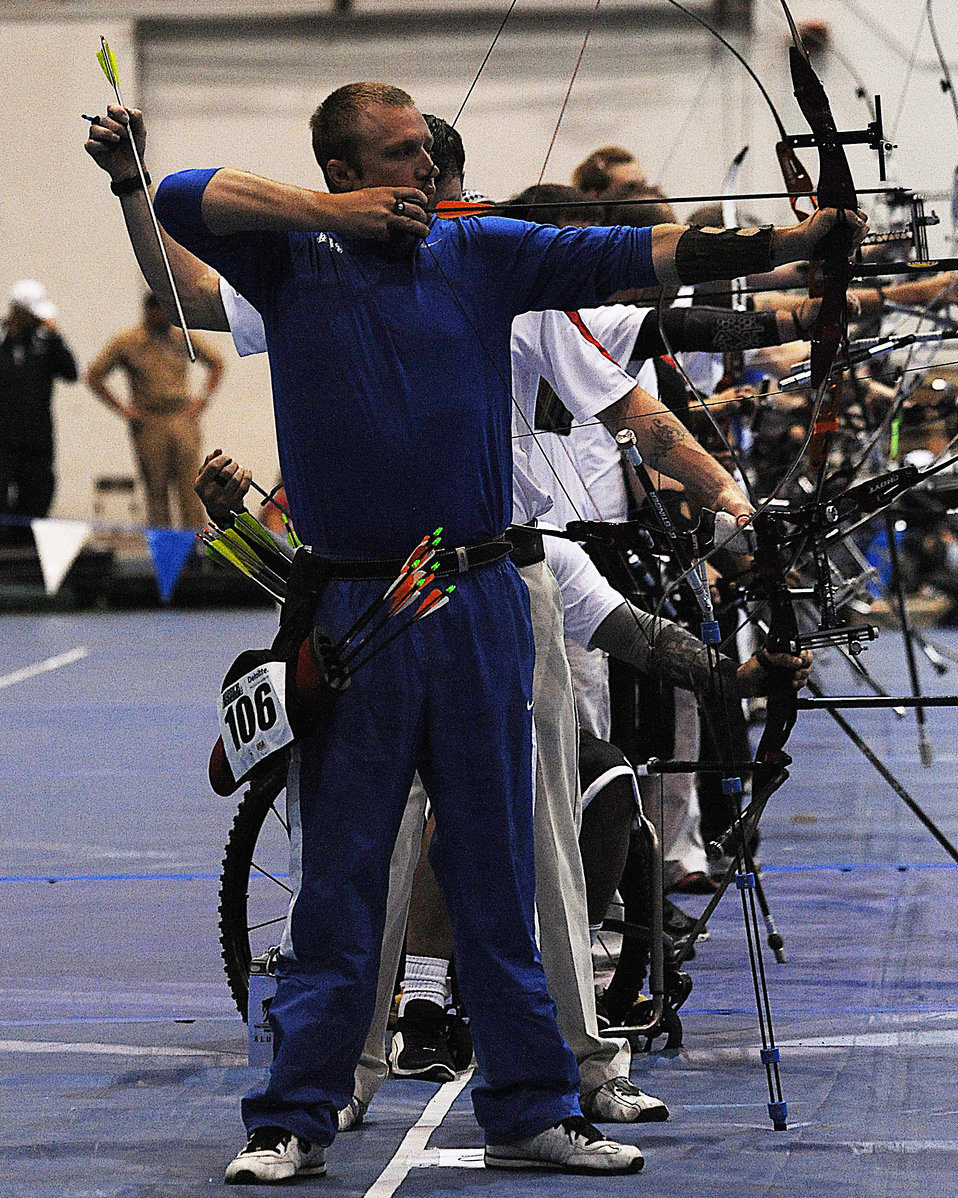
Warrior Games

Kendall Madden and other athletes aim their bows at targets during the archery competition of Warrior Games 2012 at the U.S. Air Force Academy in Colorado Springs, Colo., May 2, 2012. Madden is with the Air Force team.